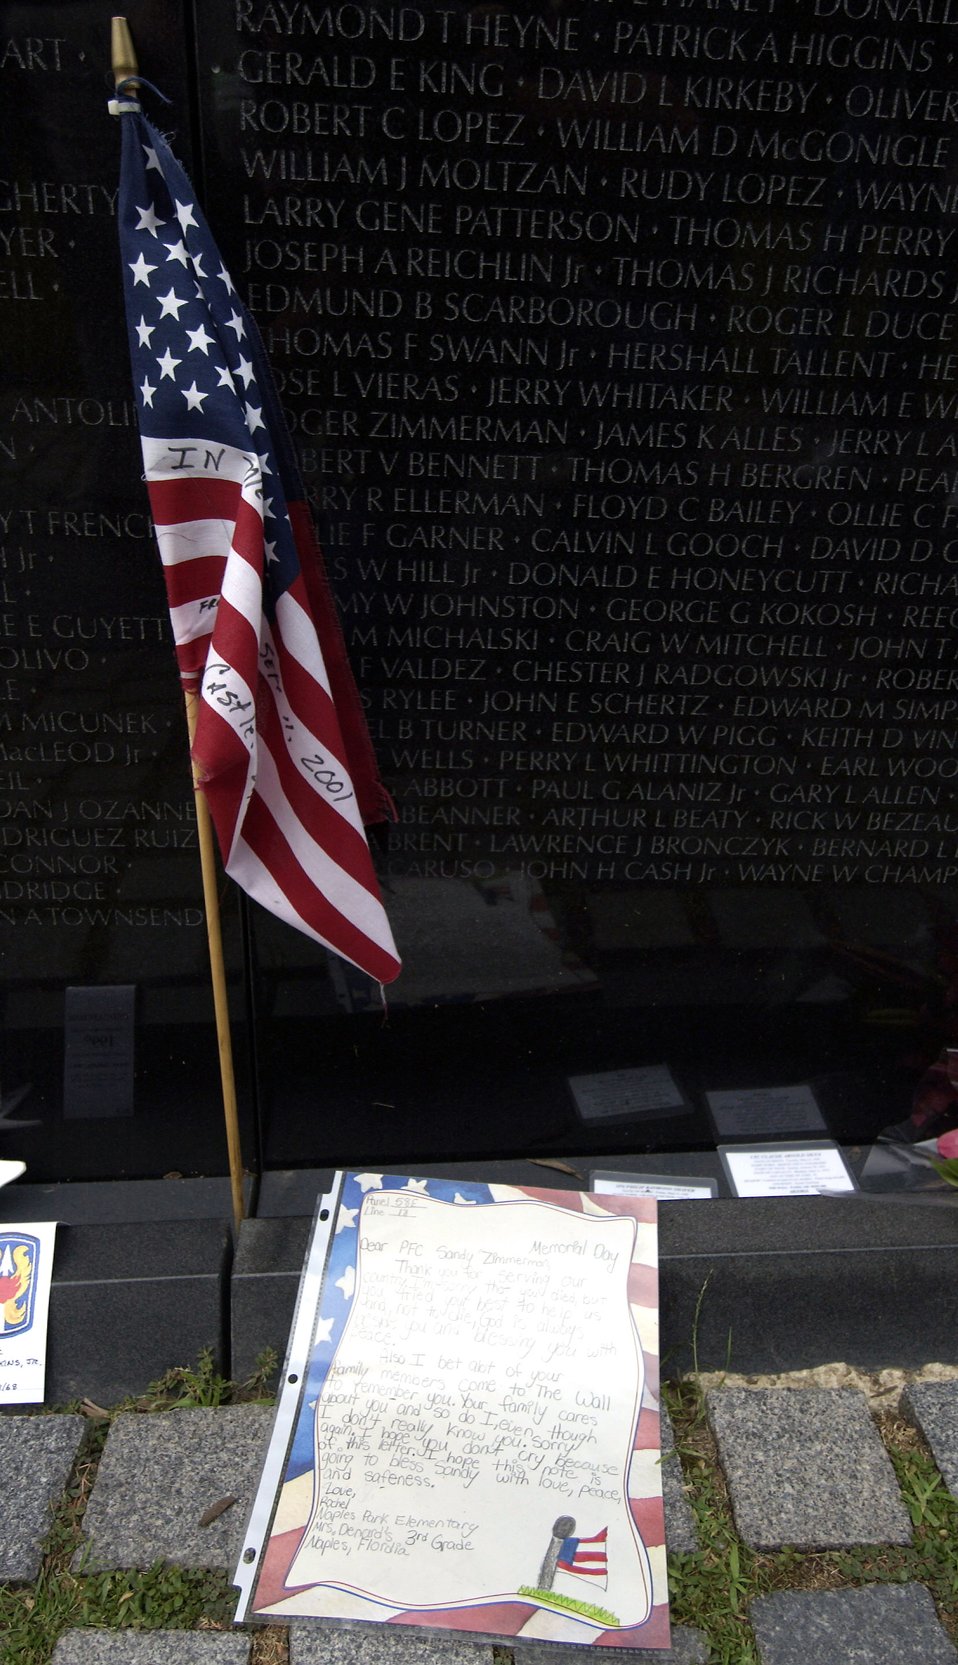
Vietnam wall speaks to both present and past

More than 400,000 motorcyclists participated in the 17th annual Rolling Thunder